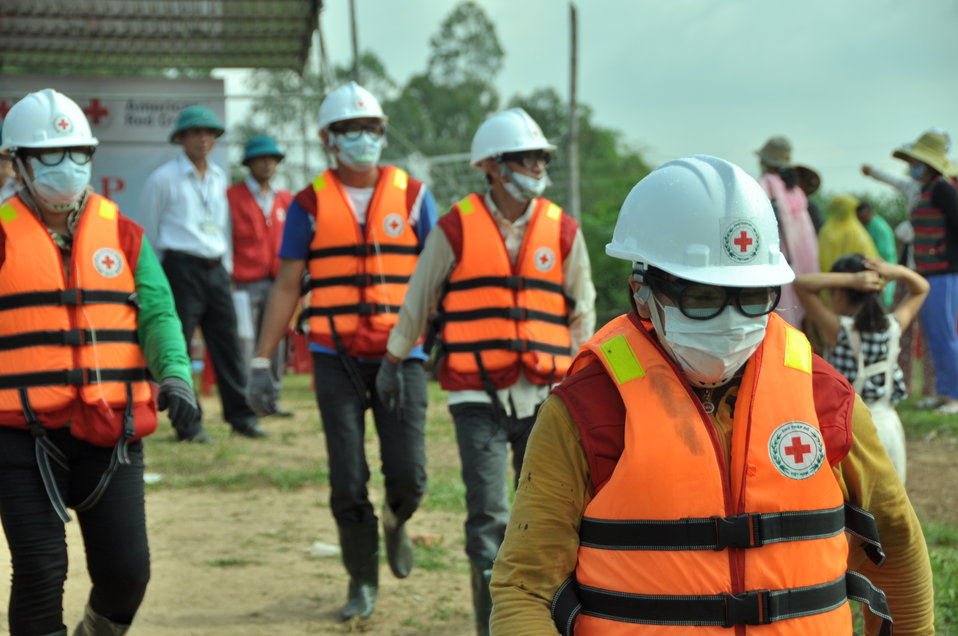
USAID, Red Cross Support Disaster Response Drill in Duy Hoa Commune, Quang Nam Province

Duy Hoa Commune, Quang Nam Province
December 5, 2012